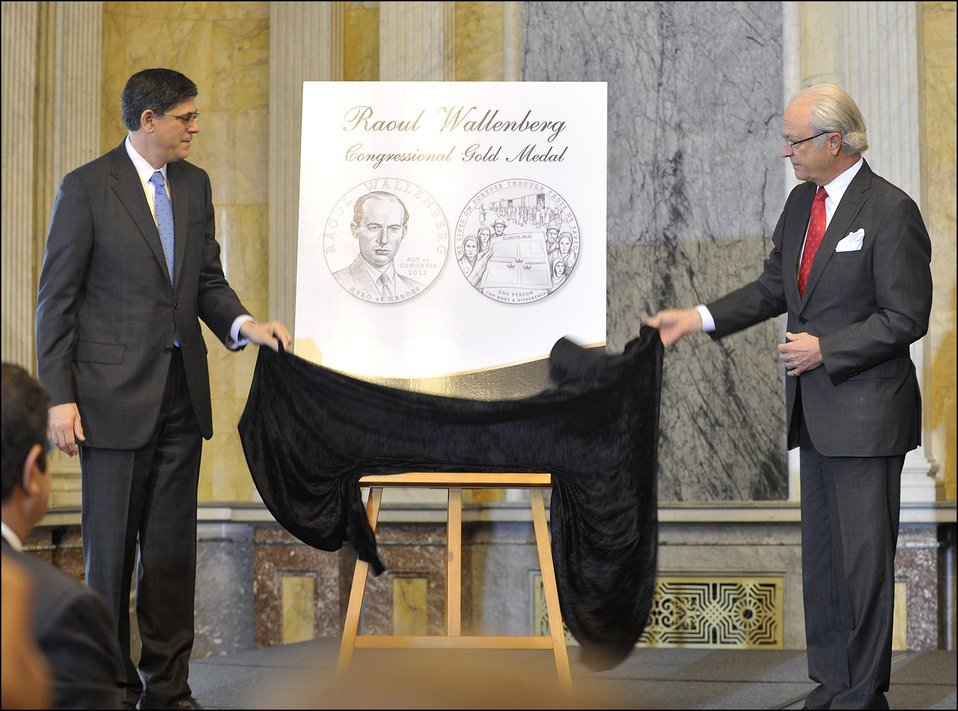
Secretary Lew participates in ceremony to unveil the Congressional Gold Medal honoring Raoull Wallenberg

May 9, 2013 — Secretary Lew was joined by His Majesty the King Carl XVI Gustaf of Sweden in the Treasury Department's Cash Room to unveil the Congressional Gold Medal that was posthumously presented to Raoul Wallenberg. Wallenberg, who was Swedish, is credited with saving thousand of Jews in Budapest during the Holocaust.